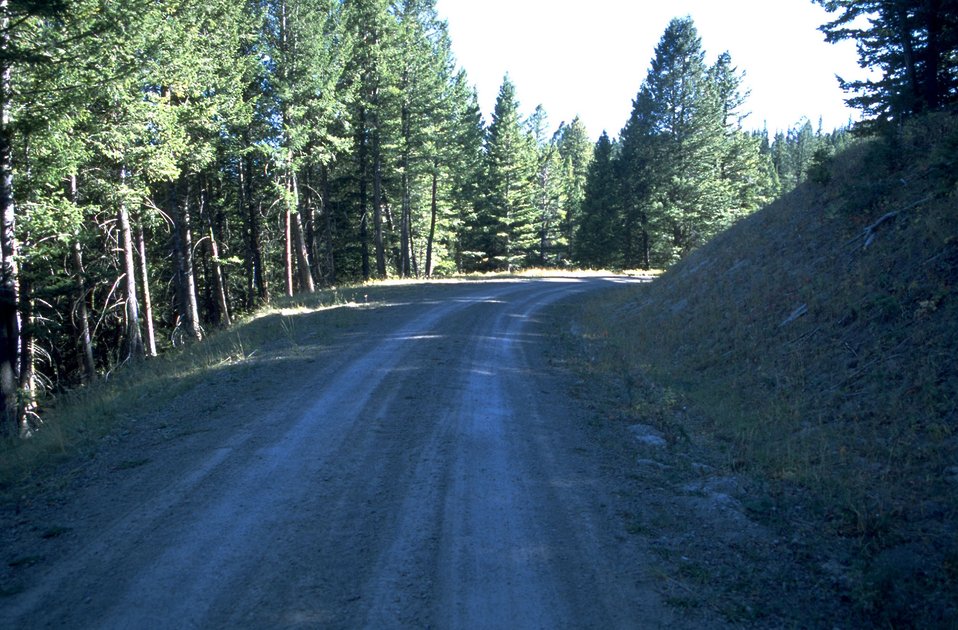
Price Peet road through forest setting